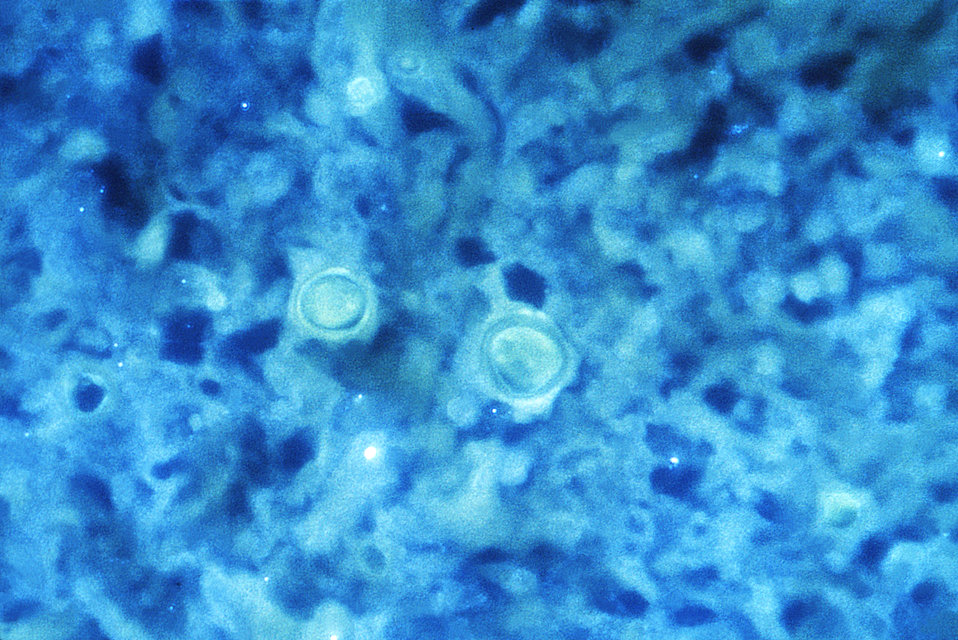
Magnified 562X, this "digested", and fluorescent antibody-stained photomicrograph reveals the presence of Blastomyces dermatitidis antigens in this human lung tissue specimen.